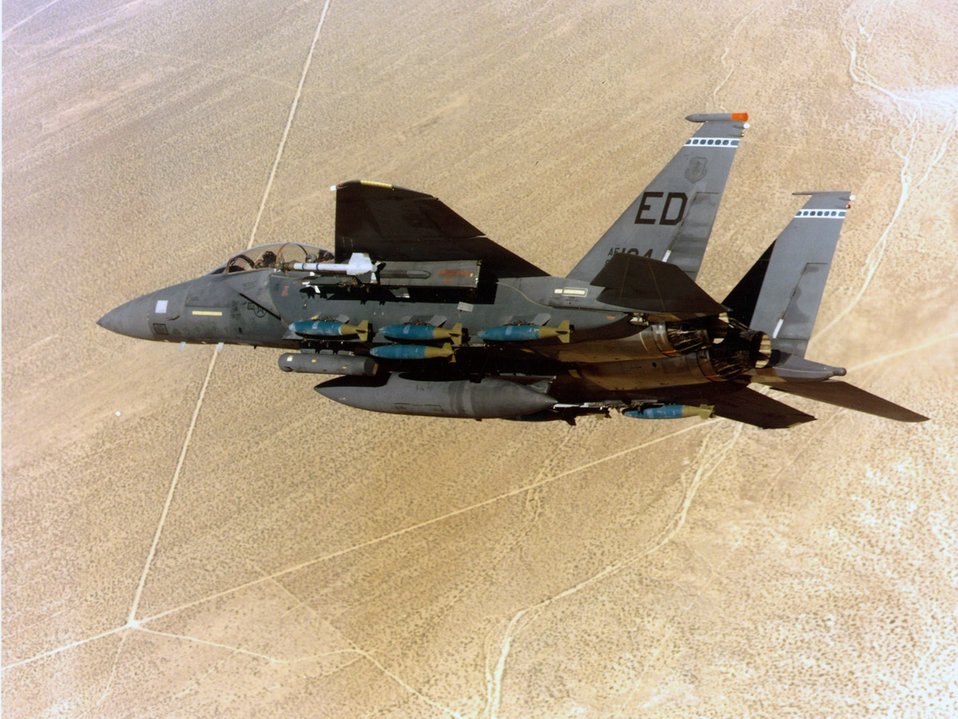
Feb. 11 airpower summary: F-15Es deter enemy activity

The F-15E Strike Eagle underwent development test and evaluation in the late 1980s and was delivered to the combat Air Force in time to play a significant role in the first Persian Gulf conflict.